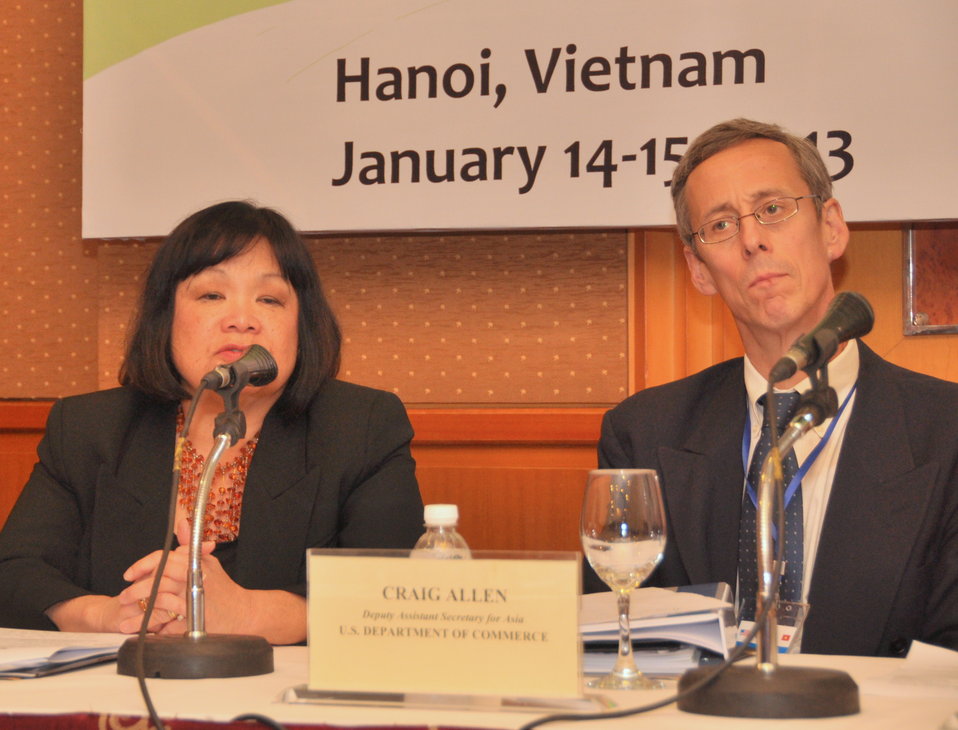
Ms. Patricia M. Loui, Board Director, Export-Import Bank of the United States, addresses a press conference at the LMI Infrastructure Best Practices Exchange in Hanoi

January 14, 2013